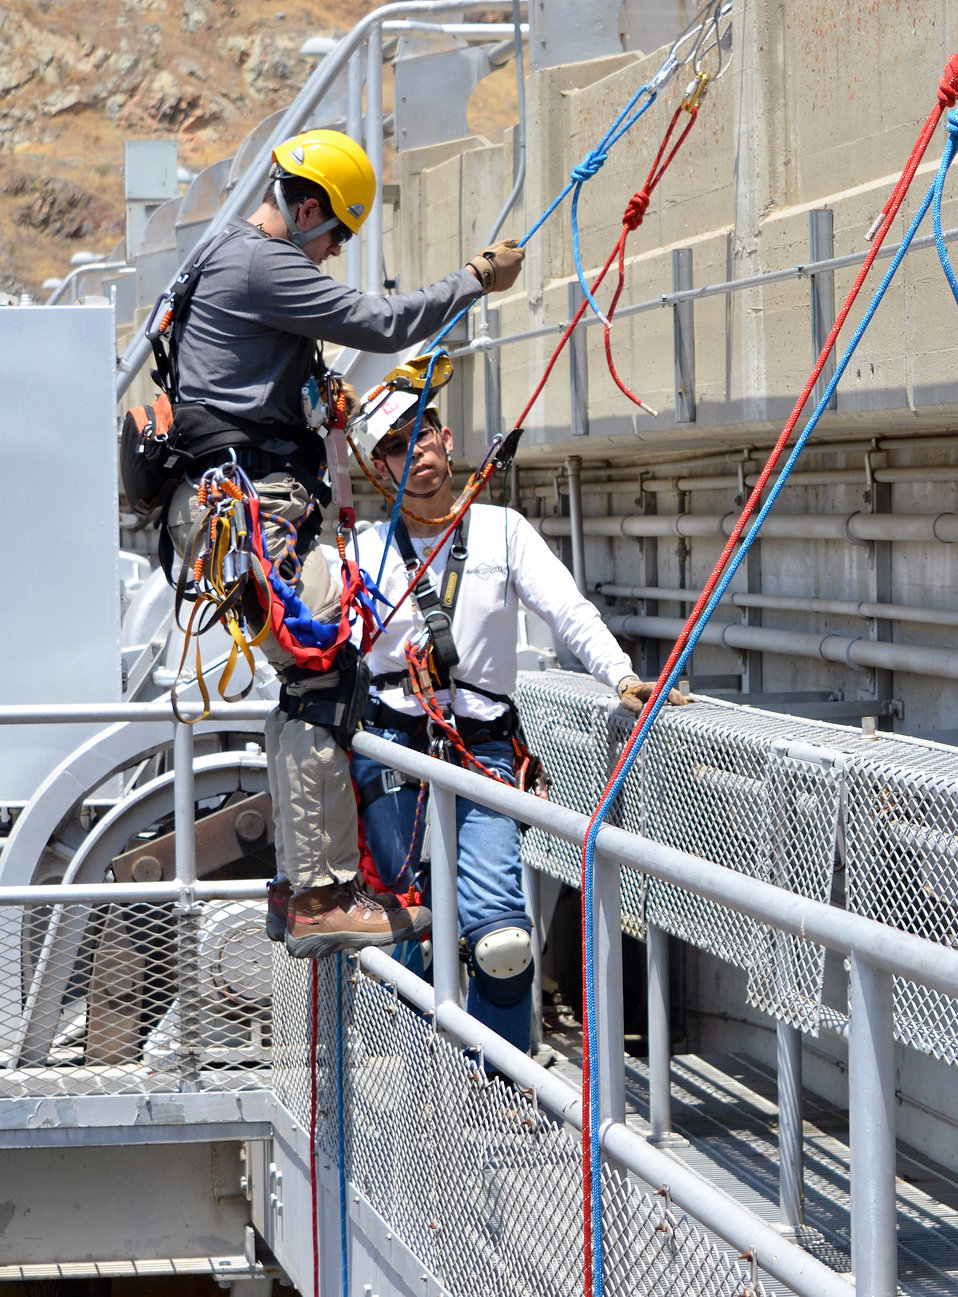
Inspecting a tainter gate at Pine Flat Dam near Fresno, Calif., June 17, 2013

Charles Jeung (right) monitors Christopher Abela as he prepares to descend and inspect a tainter gate at Pine Flat Dam near Fresno, Calif., June 17, 2013. Both Jeung and Abela are engineers and climb team members with the U.S. Army Corps of Engineers Sacramento District. Inspections are conducted every five years and are necessary to identify any issues early and ensure the dam continues to offer multiple benefits to the public. Tainter gates are a type of flood gate used in dams to control water flow. Pine Flat Dam reduces flood risk to Fresno County and stores water used for water supply and hydroelectric power. (U.S. Army photo by John Prettyman/Released) Watch the video: bit.ly/19waBqj